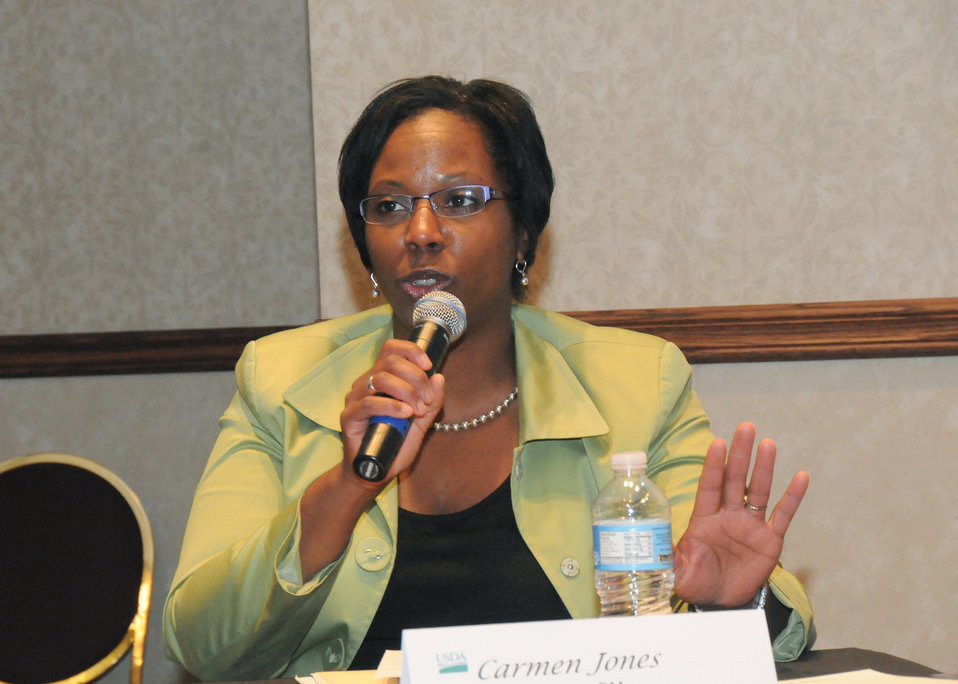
U.S. Department of Agriculture Senior Advisor for Department Management Carmen Jones makes closing remarks to employees at the Cultural Transformation listening session in Kansas City, MO, on Wednesday, April 14, 2010. USDA photo 10di1309-237.